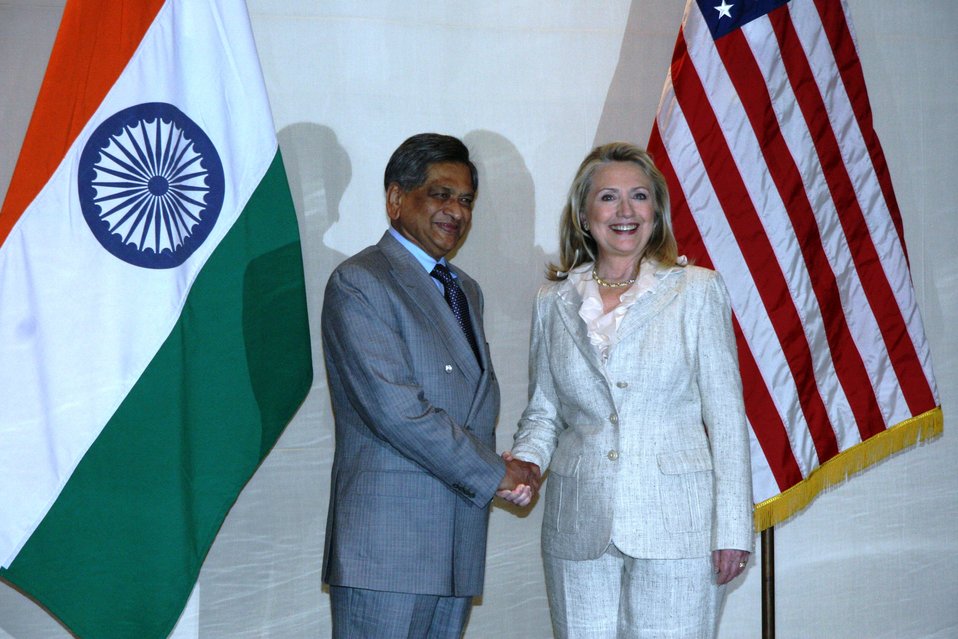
Secretary Clinton Shakes Hands With Indian Minister Krishna

U.S. Secretary of State Hillary Rodham Clinton shakes hands with Indian External Affairs Minister Somanahalli Mallaiah Krishna after their joint press conference in New Delhi, India, on May 8, 2012.